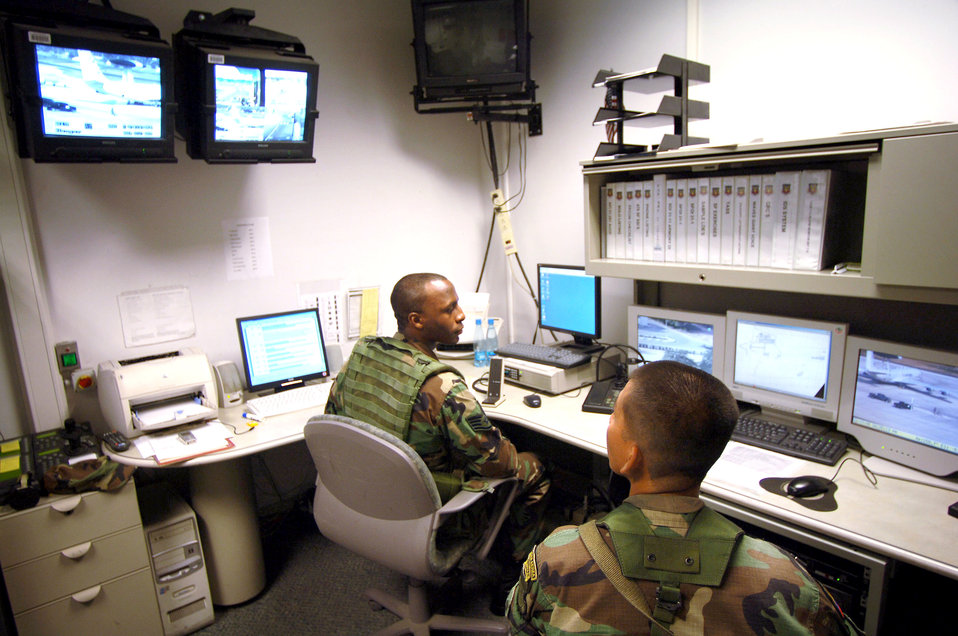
U.S. security forces work alongside Ecuador airmen

MANTA AIR BASE, Ecuador -- Staff Sgt. Eric Adams (left) works alongside his Ecuadorian counterpart, Geovanni Llongo, who is learning to use the equipment in a security forces control room. Sergeant Adams is deployed here from Langley Air Force Base, Va.